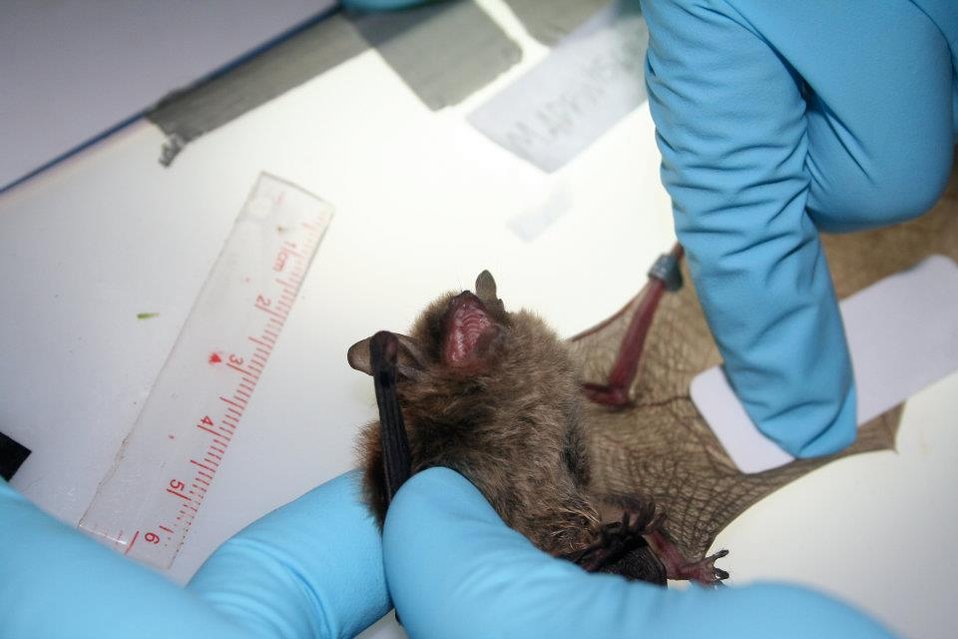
BU researcher collects sebum sample from bat wing